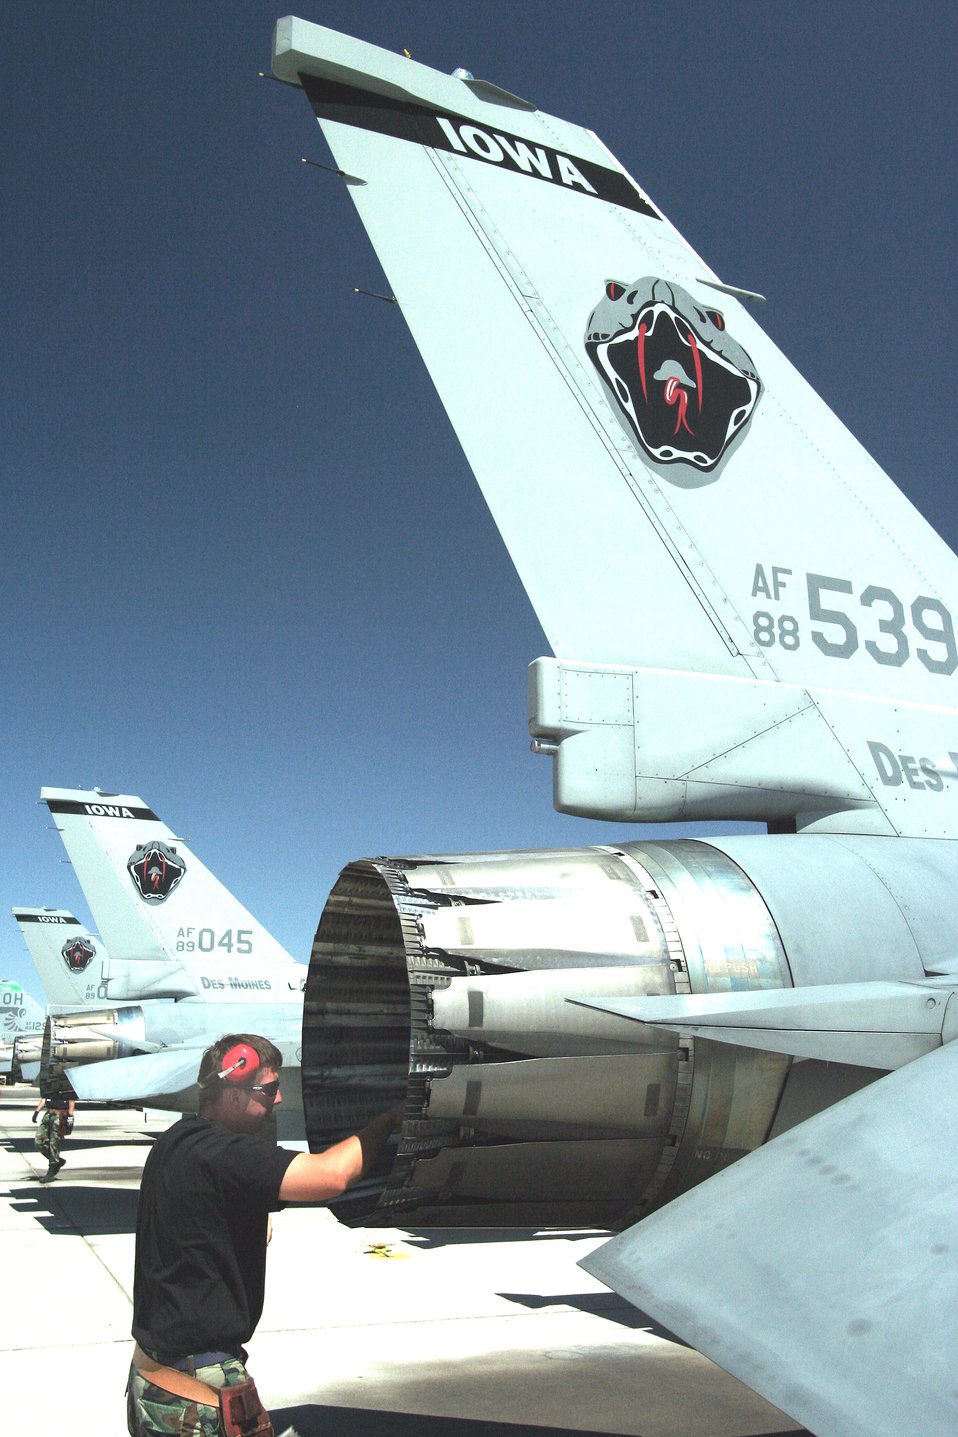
Getting ready for Red Flag

Tech. Sgt. Scott Flesher performs a preflight inspection of an F-16 Fighting Falcon that is being readied for a mission at Red Flag 06-02 at Nellis Air Force Base, Nev., on Aug. 8. Sergeant Flesher is a maintainer with the Iowa Air National Guard's 132nd Fighter Wing in Des Moines.